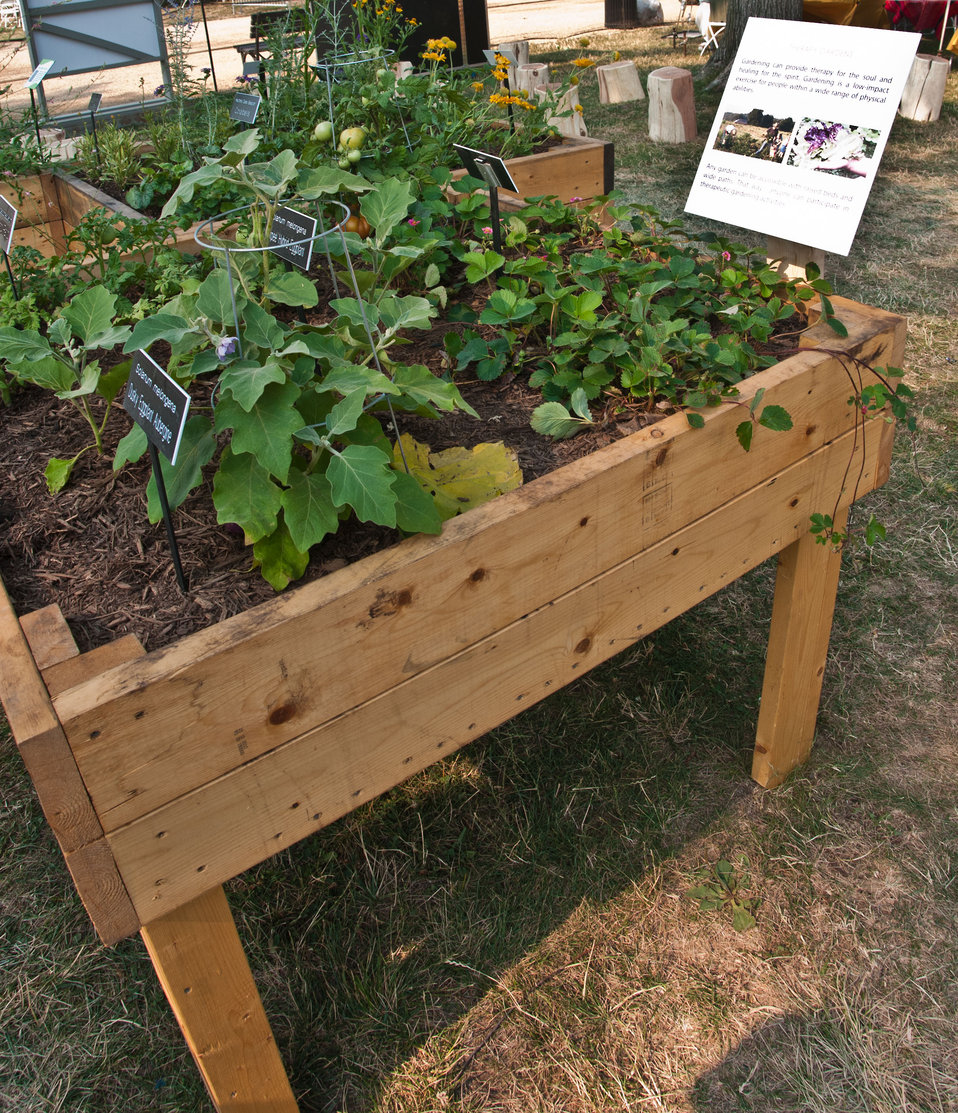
U.S. Department of Agriculture People’s Garden Initiative Therapy Gardens at the 2012 Smithsonian Folklife Festival, in Washington, D.C., Thursday, June 28, 2012 on the National Mall in Washington, D.C. The small raised beds provide therapy for a person’s spirit, by providing a low-impact exercise for people within a wide range of abilities. Their height and dimension allow those in wheelchairs access to the center bed. One of the three themes this year is “Campus and Community.” It celebrates the 150 years of the USDA and the Land-Grant University System. The U.S. Department of Agriculture (USDA) and the Land-Grant system extend education across the country, contributing to American agriculture success and rural prosperity. “Campus and Community” has demonstrations, discussions, hands-on activities, and entertainment to that showcase the many ways that this partnership works to improve American agriculture and rural life.